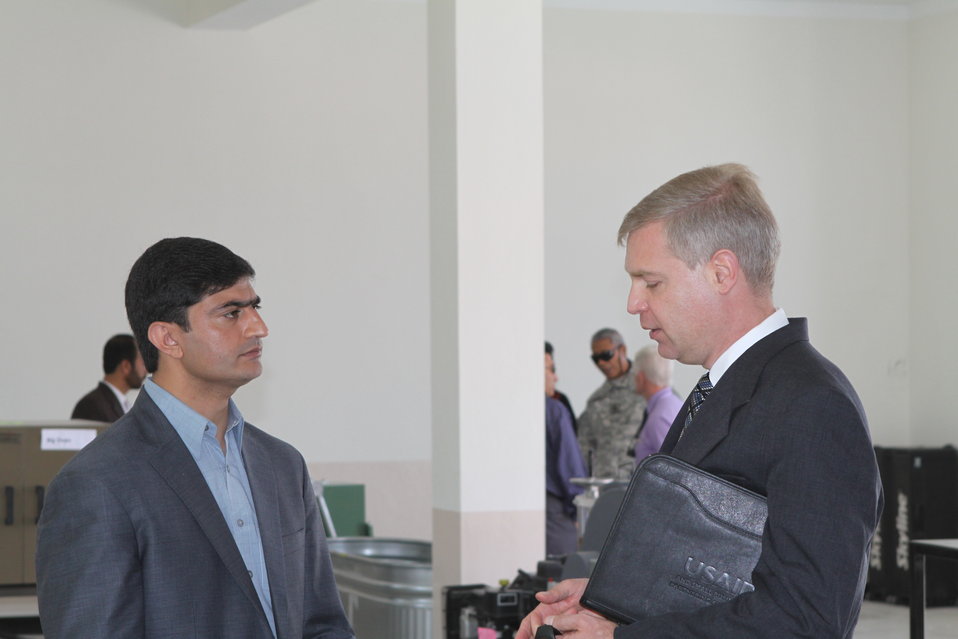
100522 ATVI Graduation 007